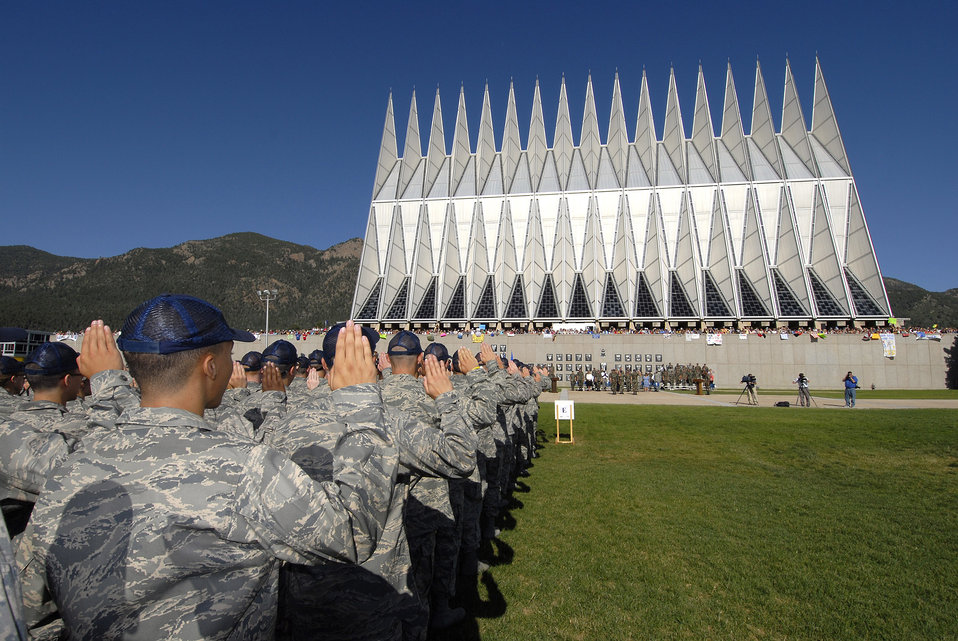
Class of 2012 Arrives

The Class of 2012 recites the Oath of Allegiance on Day Two of the 38 days of Basic Cadet Training June 27 at the U.S. Air Force Academy, Colo. Inprocesing marks the start of 38 days of Basic Cadet Training, which is designed to prepare basic cadet trainees for entry into the cadet wing.